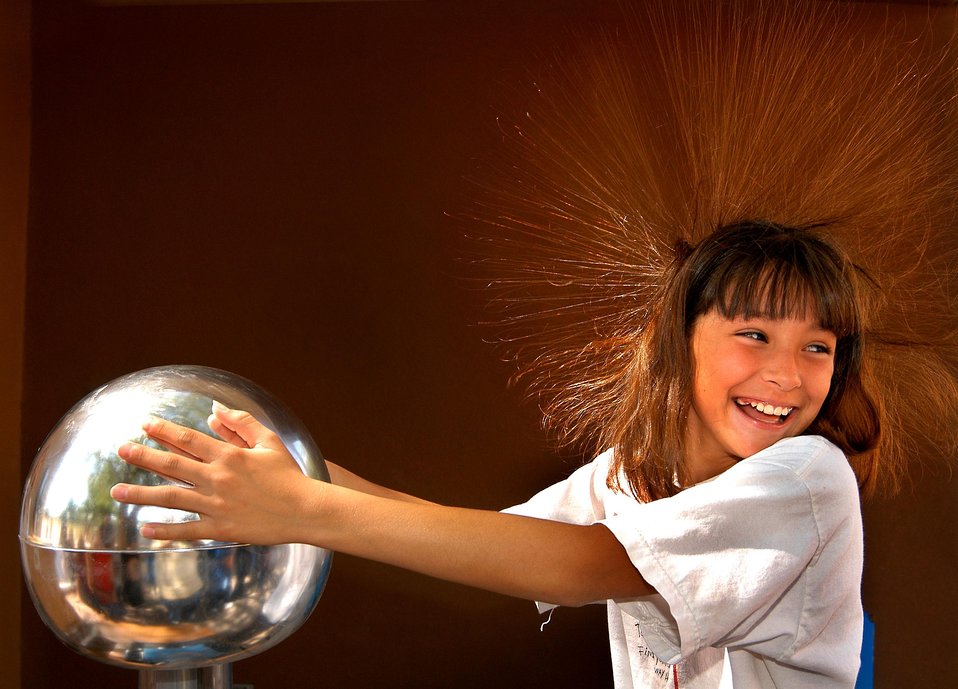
STATIC ELECTRICITY DEMONSTRATION DURING FAMILY SCIENCE NIGHT AT SANDIA NATIONAL LABORATORY.

SANDIA EDUCATION PARTNERSHIP PROGRAM CONTINUES TO GROW IN SCOPE AND SUPPORT. FAMILY SCIENCE NIGHTS HAVE GROWN TO MORE THAN 40 PER YEAR.